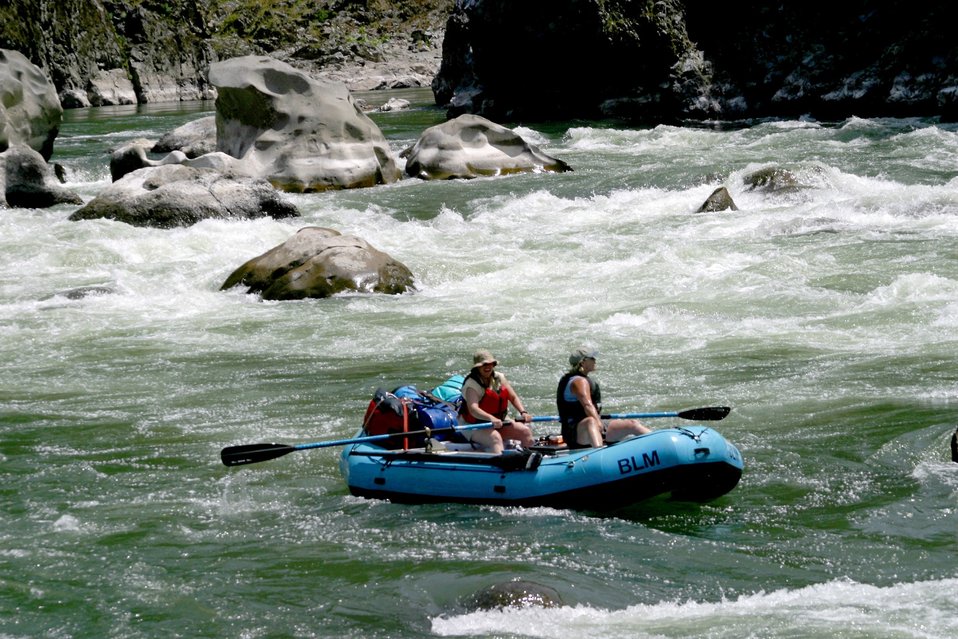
Wild section of the Rogue River from Grave Creek to Foster Bar May 19 to May 22.